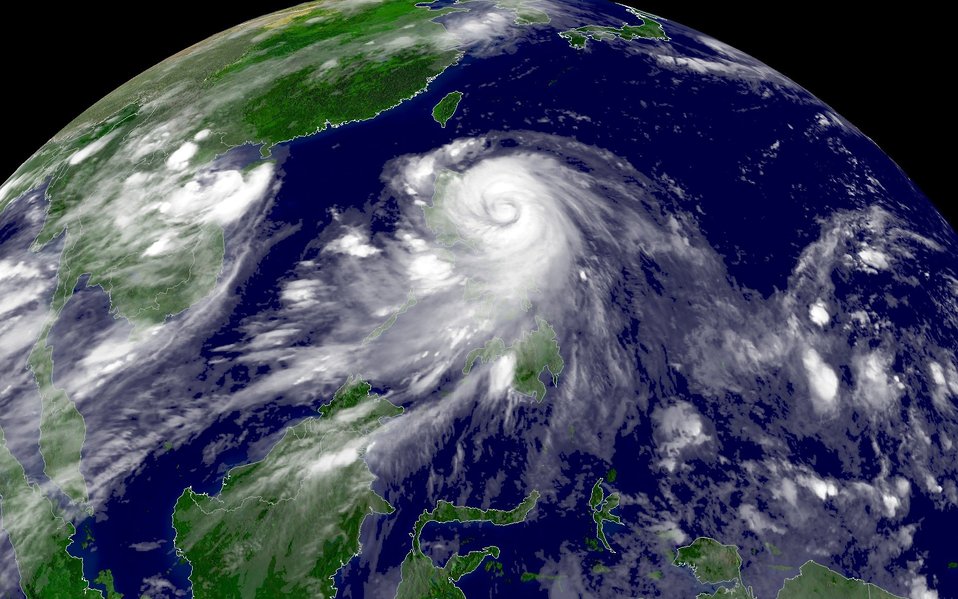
Typhoon Imbudo striking Luzon in the Philippine Islands.